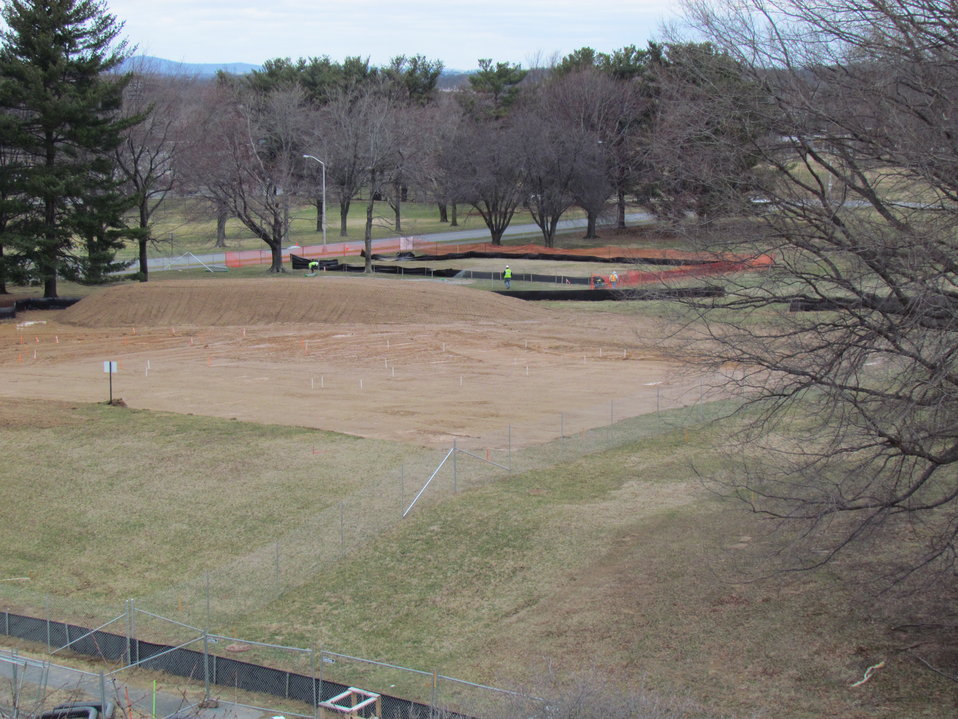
Net-Zero Energy Residential Test Facility - Aerial view of construction site